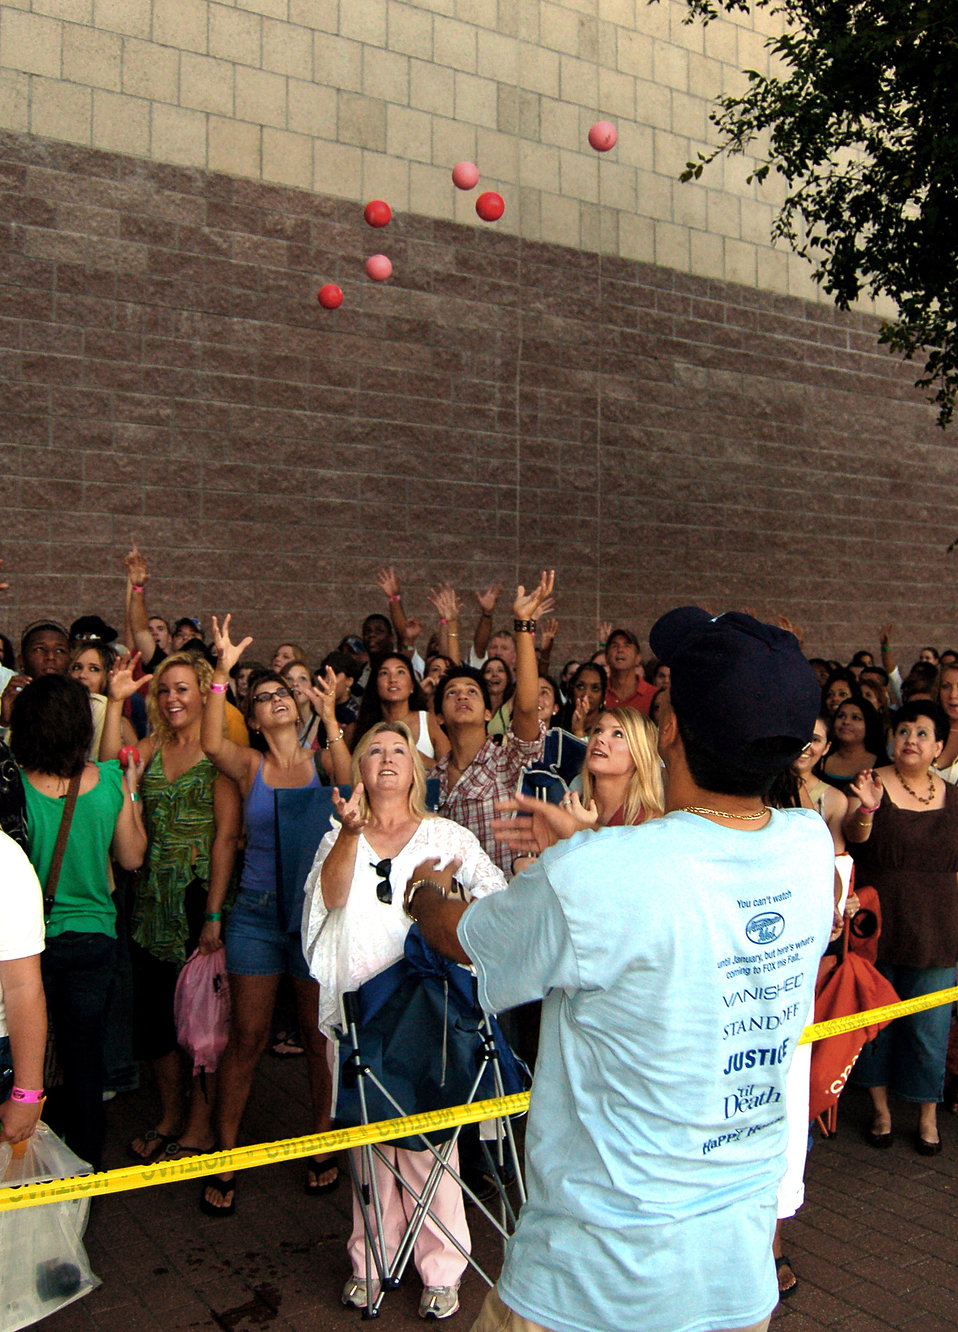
Two Alamo City Airmen vie for 'American Idol' spot

Thousands of hopefuls receive free trinkets while waiting outside the Alamodome for their chance to tryout for the FOX television show